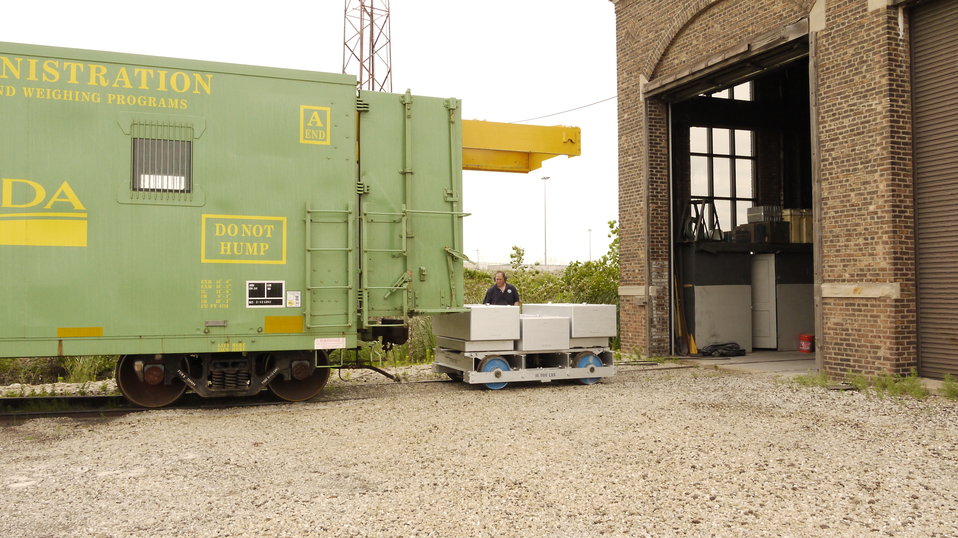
The U.S. Department of Agriculture’s (USDA) Grain Inspection, Packers and Stockyard Administration (GIPSA) uses this FGWX700000 test car unit to calibrate railroad track scales that are used to weigh grain and other agricultural products at the USDA GIPSA Master Scale Depot in Chicago, IL on Jul. 2, 2013. USDA GIPSA entered into an agreement with the National Institute of Standards and Technology (NIST) and the Association of American Railroads (AAR) in 1980 transferring responsibility to USDA’s GIPSA to maintain the Master Scale facility in Chicago, IL and calibrate all the master scales in the continental U.S. annually.